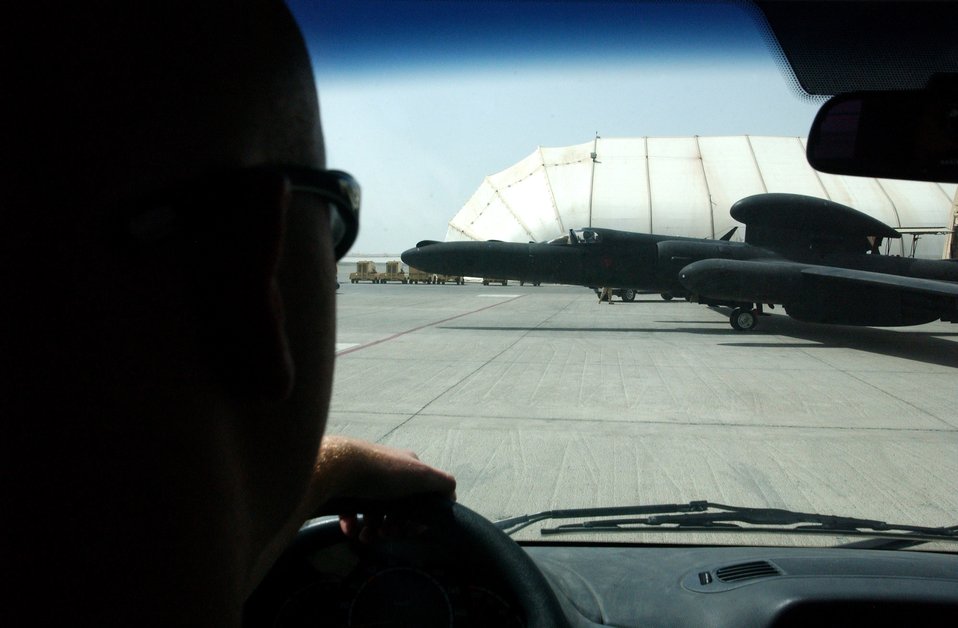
U-2 operations

As Senior Airman Shawn Nyer watches, a U-2 piloted by Capt. Greg Hafner rolls out of its hangar at a forward-operating base in Southwest Asia Sept. 5. Airman Nyer helped Captain Hafner into the full-pressure suit and helmet needed for the mission.